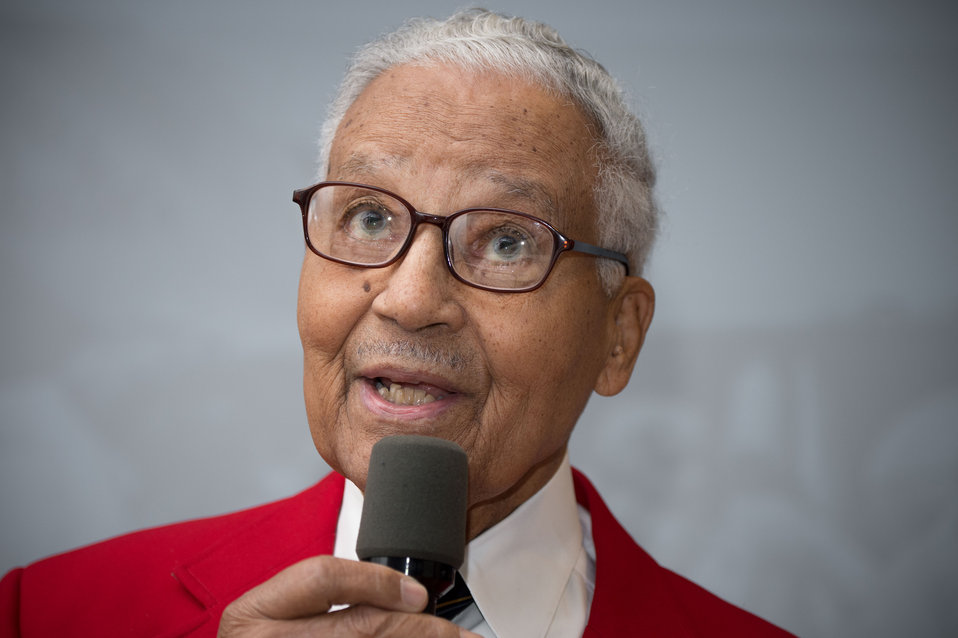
Pilot and Tuskegee Airman, Colonel Charles Edward McGee, U.S. Air Force (USAF) ret. speaks at the U.S. Department of Agriculture's (USDA) Office of the Assistant Secretary for Civil Rights (OASCR) program “In conversation With Tuskegee Airmen”, which honored the airmen’s successes both overseas and at home at USDA in Washington, D.C. on Thursday Mar. 27, 2014. Col. McGee spoke about his experiences in the Army Air Corp (later the Army Air Force and U.S.Air Force). Questions from the audience provided several opportunities for discussion about civil rights challenges and how they achieved success and respect.